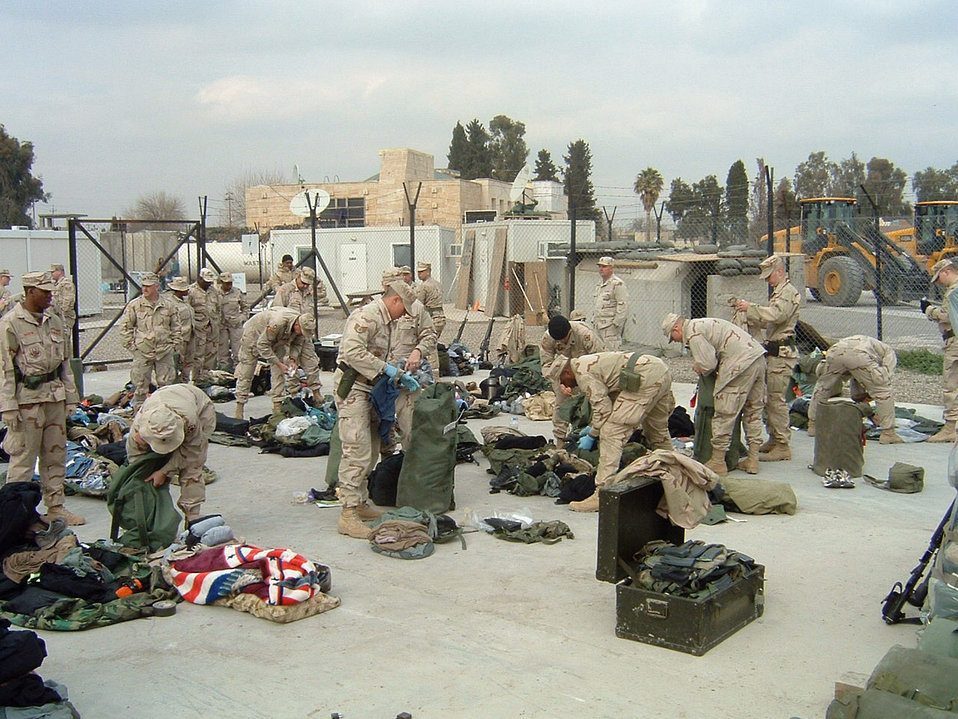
Deployed security forces take on military police mission

MOSUL, Iraq -- Airmen from the 732nd Expeditionary Mission Support Group's Detachment 1 perform a customs inspection for an Army unit leaving Iraq. The Airmen are providing law and order and enforcing customs laws on an Army installation here.